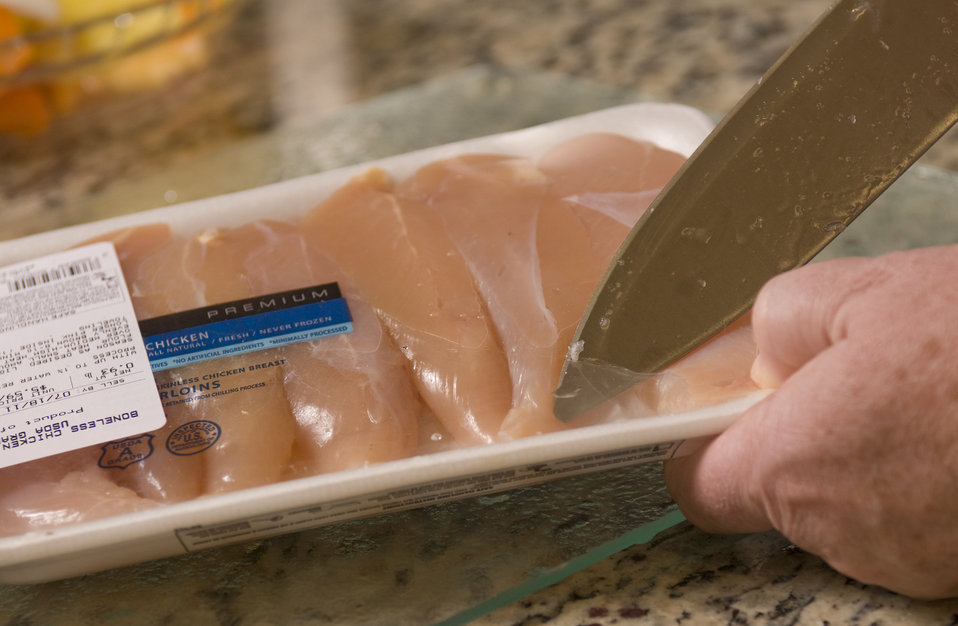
Chicken breast filets

This photograph shows a person in the process of opening a small package of deboned chicken breast filets, by using a knife to cut through the exterior plastic wrapping.